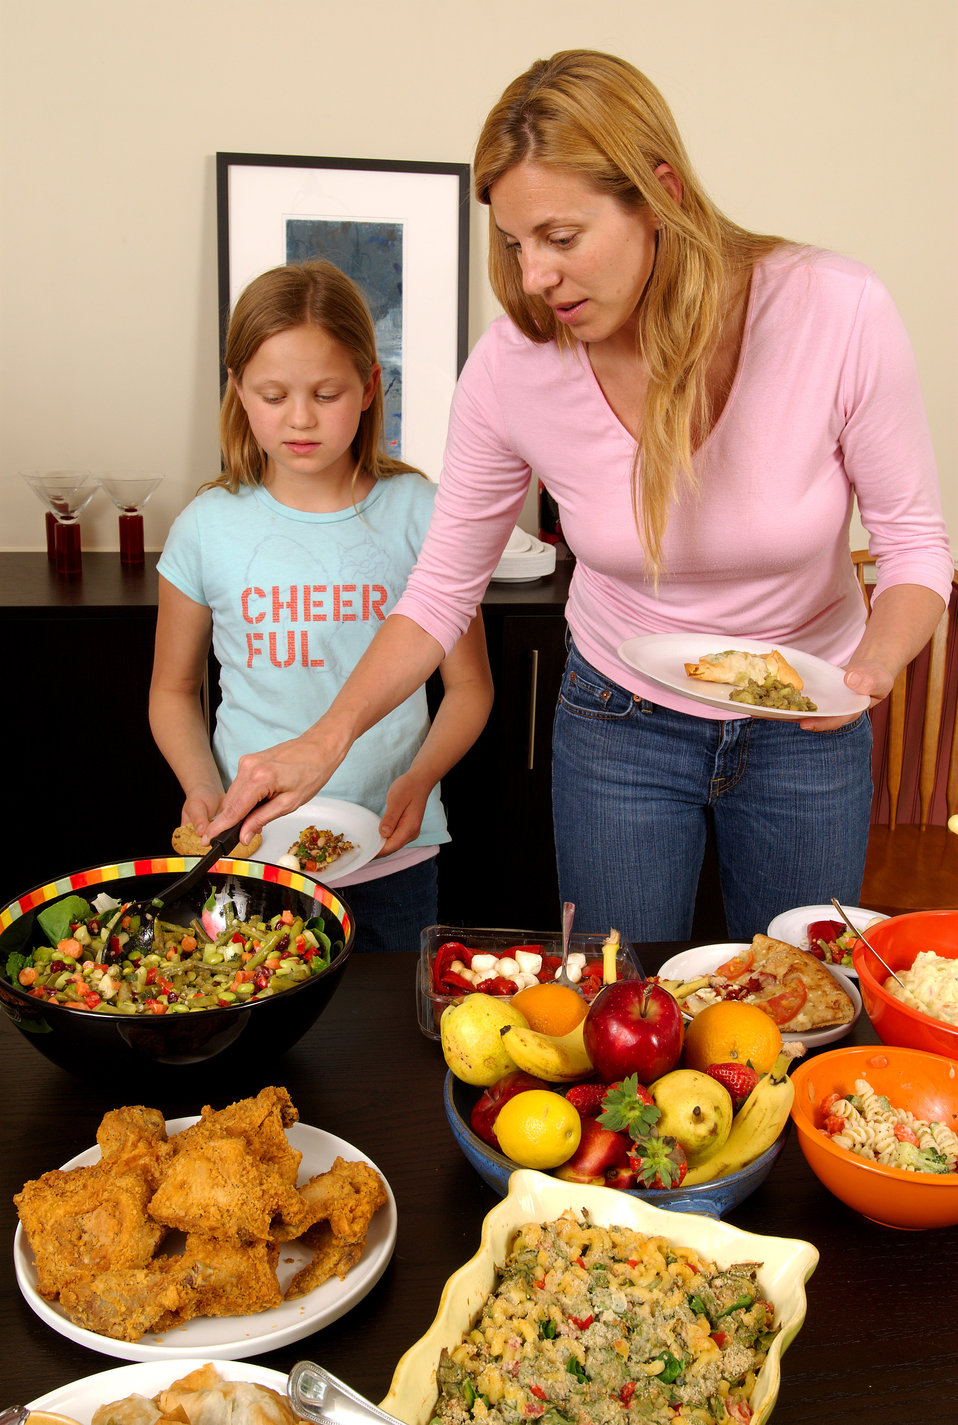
This image depicts a young girl and her mother, serving themselves at a dining table, atop which was plated a large quantity of foods representing a number of different food groups: grains, fruits, vegetables, milk products, meats/poultry/fish, and nuts/seeds/legumes.